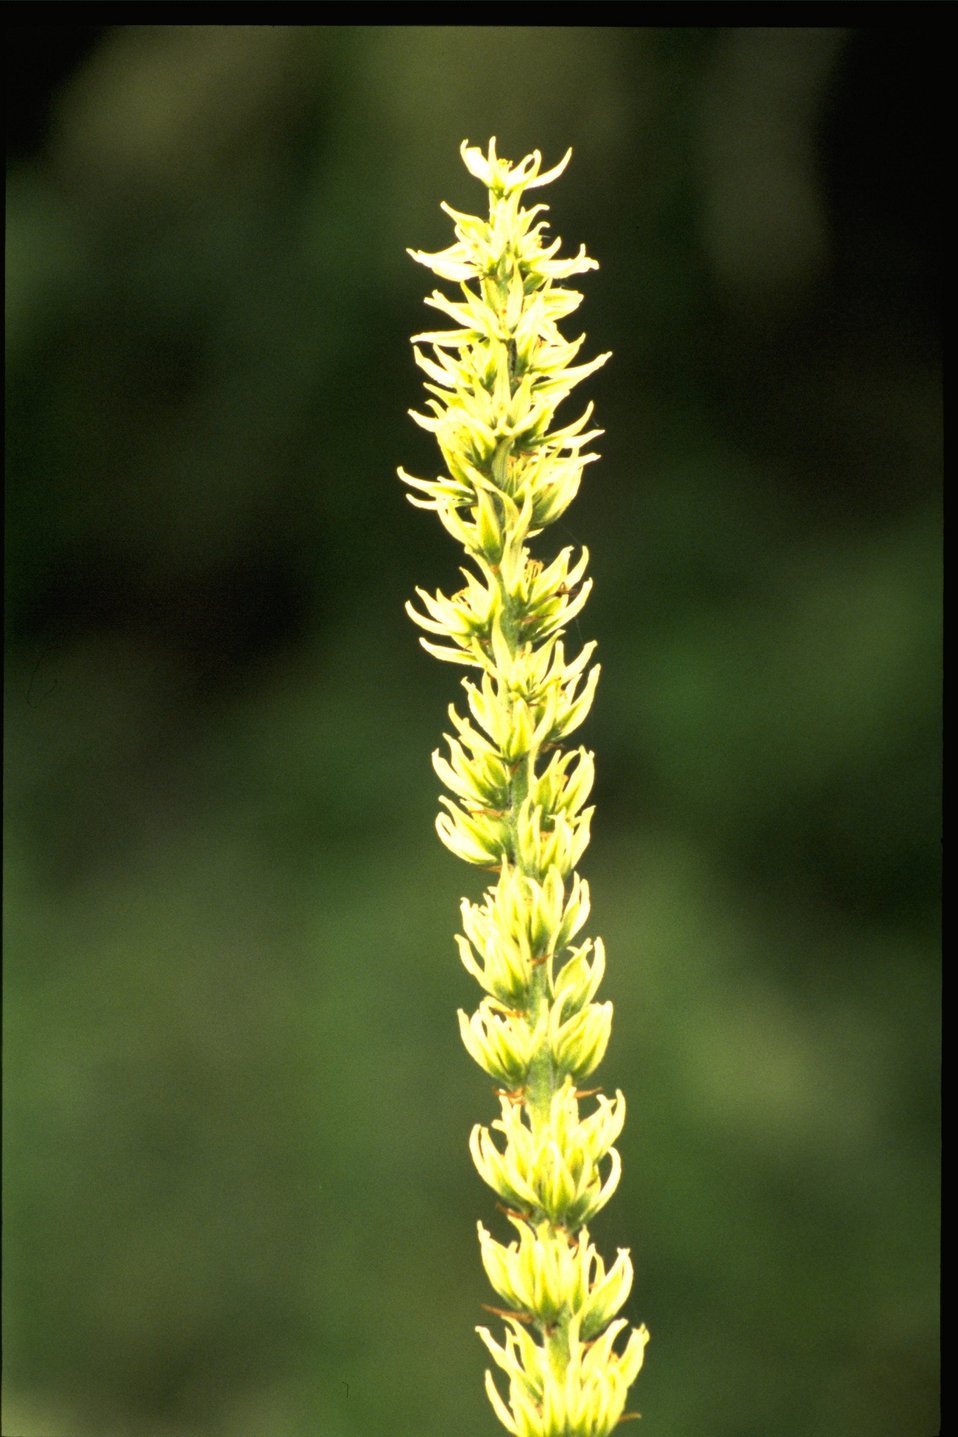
Medium shot of Veratrum.